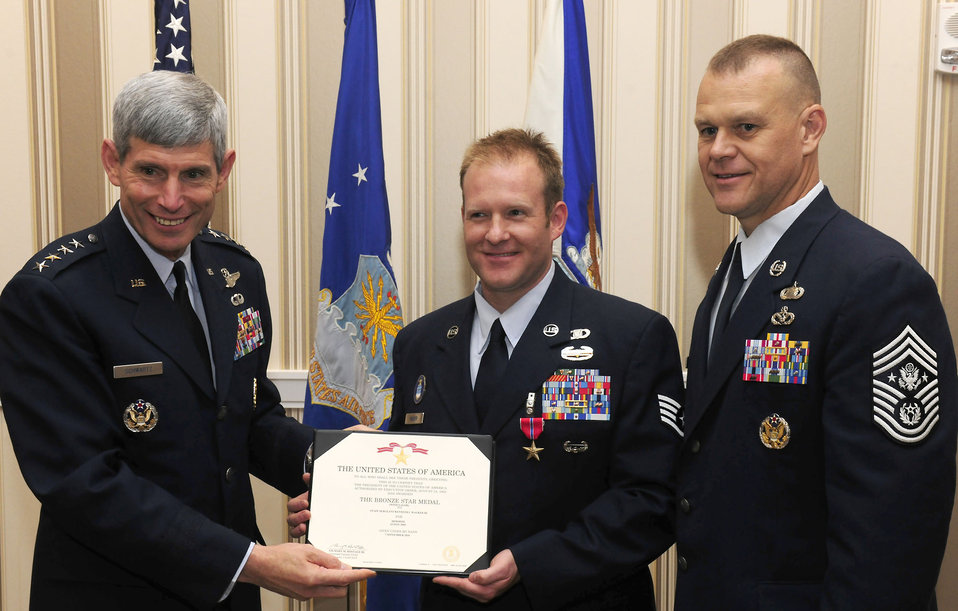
Airman receives Bronze Star with Valor during AFA

Air Force Chief of Staff Gen. Norton Schwartz and Chief Master Sgt. of the Air Force James Roy congratulate Staff Sgt. Kenneth I. Walker III after he was presented the Bronze Star with Valor Sept. 14, 2010, during the Air Force Association's Air and Space Conference and Technology Exposition at National Harbor in Oxon Hill, Md. Sergeant Walker earned the award for heroism displayed during ground combat in Ghosleck Valley, Afghanistan.